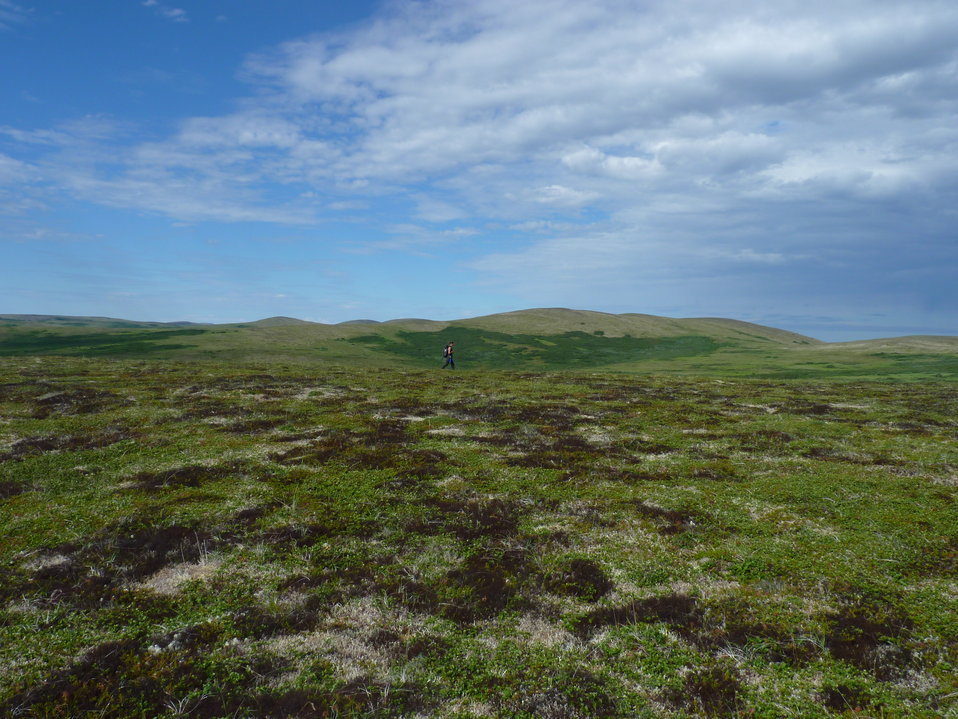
Andreafsky Wilderness, Yukon Delta National Wildlife Refuge